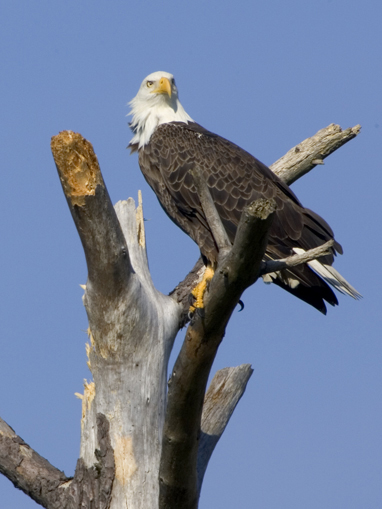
American Bald Eagle

The American bald eagle is just one of the species at Blackwater National Wildlife Refuge that could be affected by climate change and sea level rise.